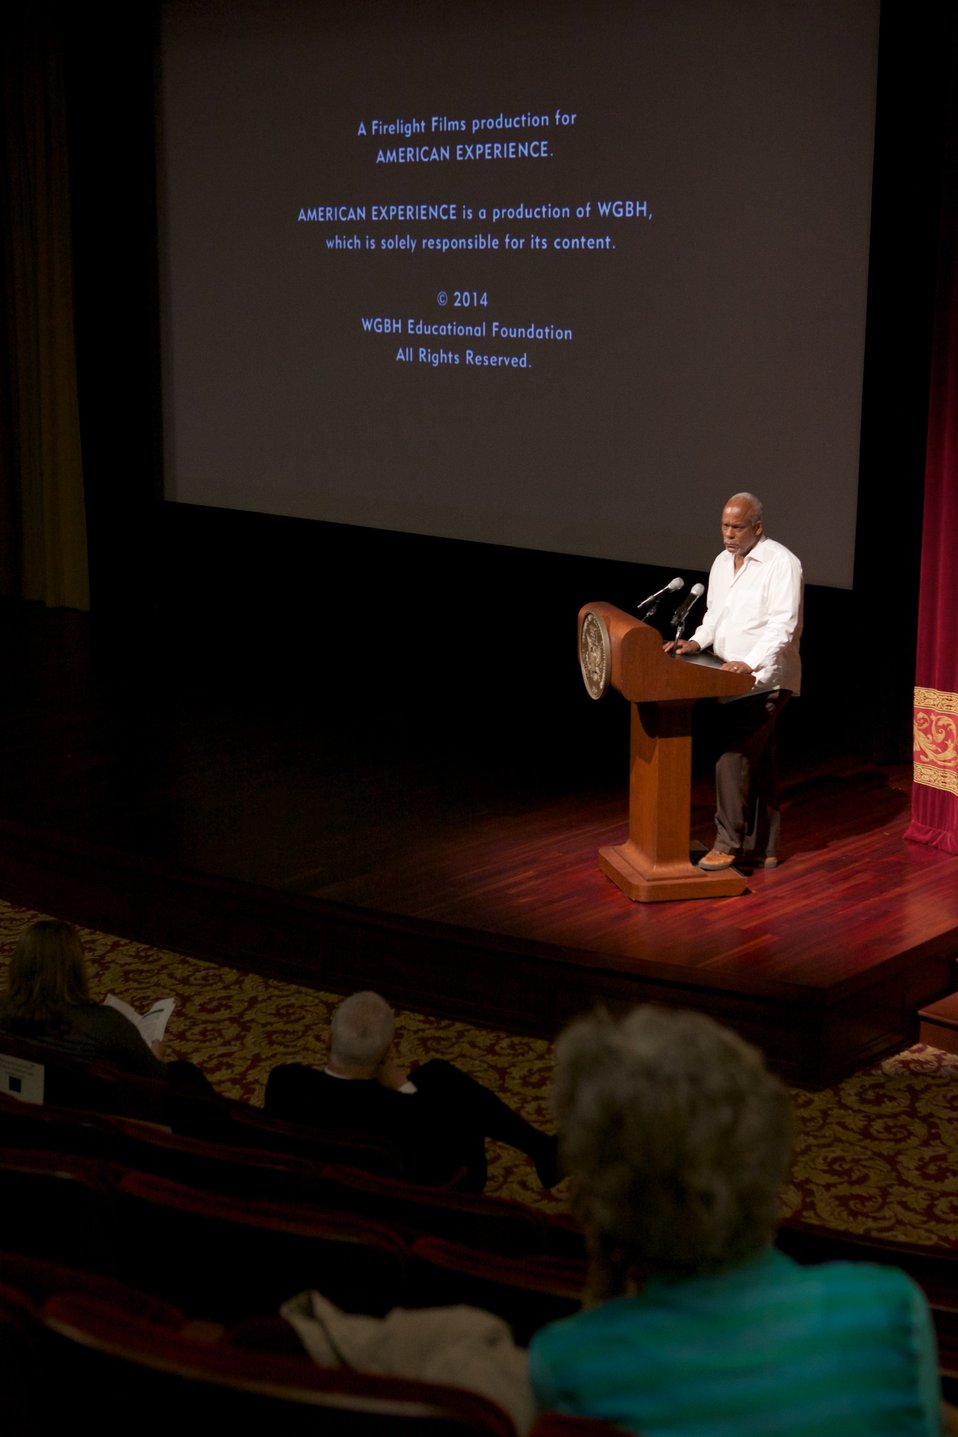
Freedom Summer